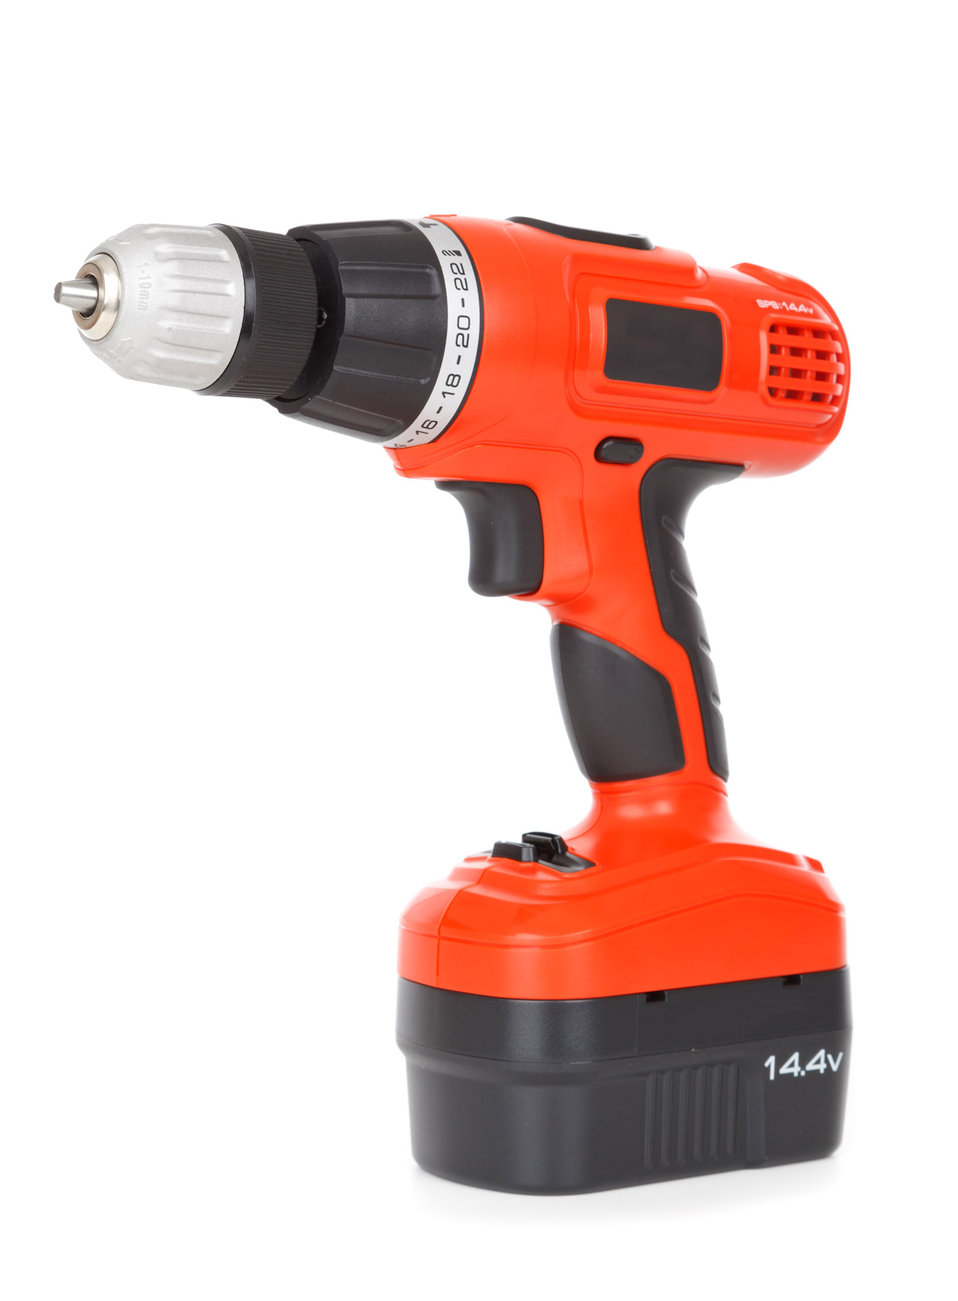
Cordless drill

Cordless power drill isolated on white background.